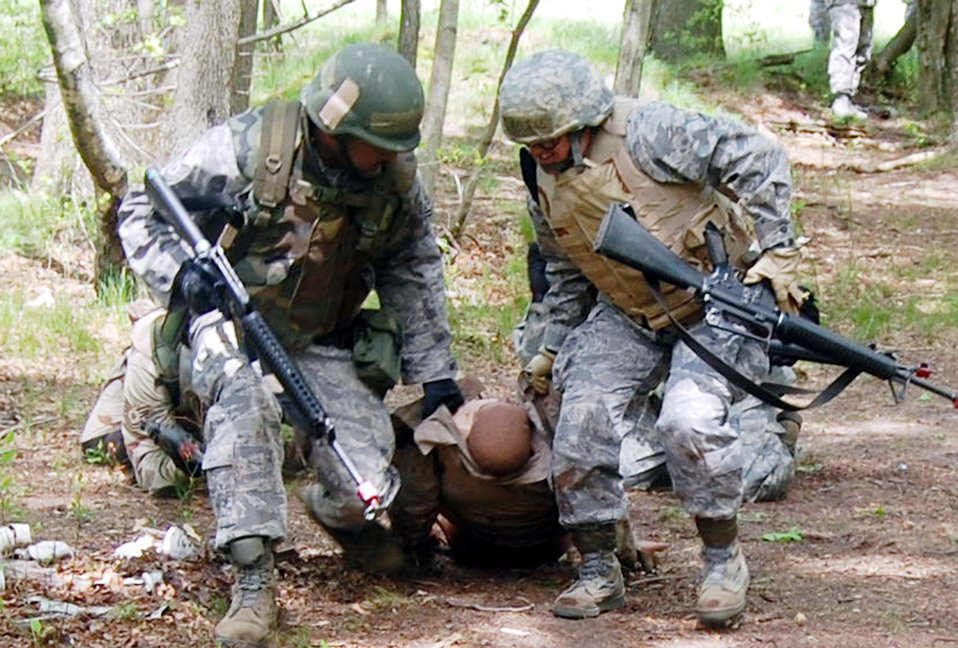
Injured Airman credits training for saving her life

Students in the Advanced Contingency Skills Training Course move simulated victims during training May 11, 2009 at Joint Base McGuire-Dix-Lakehurst, N.J. The training prepares Airmen for upcoming deployments.